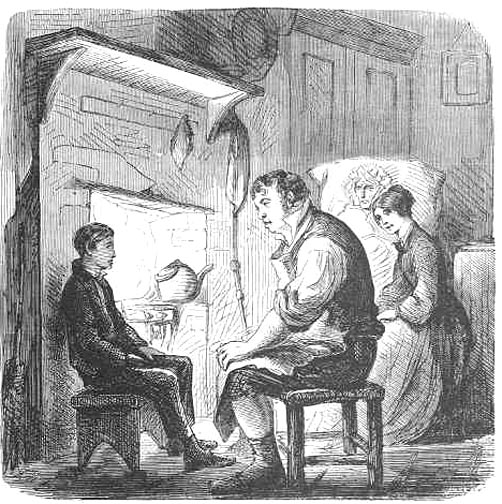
Great Expectations: Joe commenting on Pip's good fortune, by John McLenan. Français : Les Grandes Espérances : Joe commentant les grandes espérances de Pip, par John McLenan.